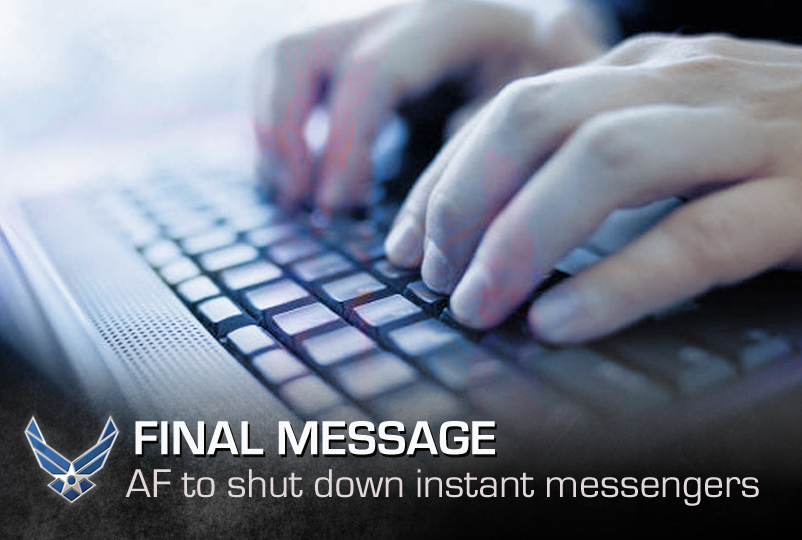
Final Message